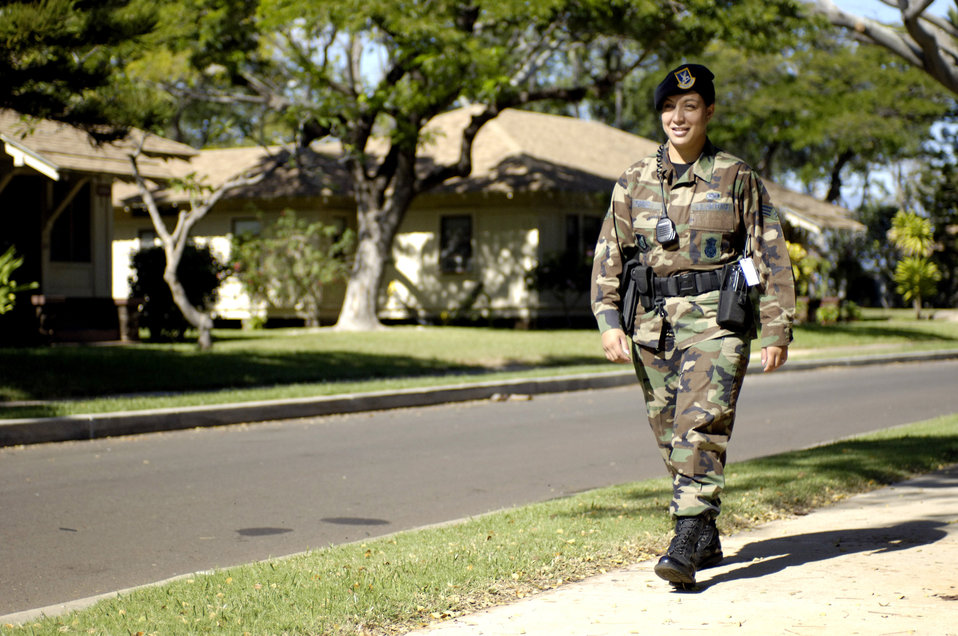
Foot patrol

HICKAM AIR FORCE BASE, Hawaii (AFPN) -- Senior Airman Tanya Perez walks a foot patrol through base housing. As part of the Pacific Air Forces energy conservation effort, security forces here have increased foot patrols to cut down on the amount of fuel used in their cruisers. Airman Perez is with the 15th Security Forces Squadron.